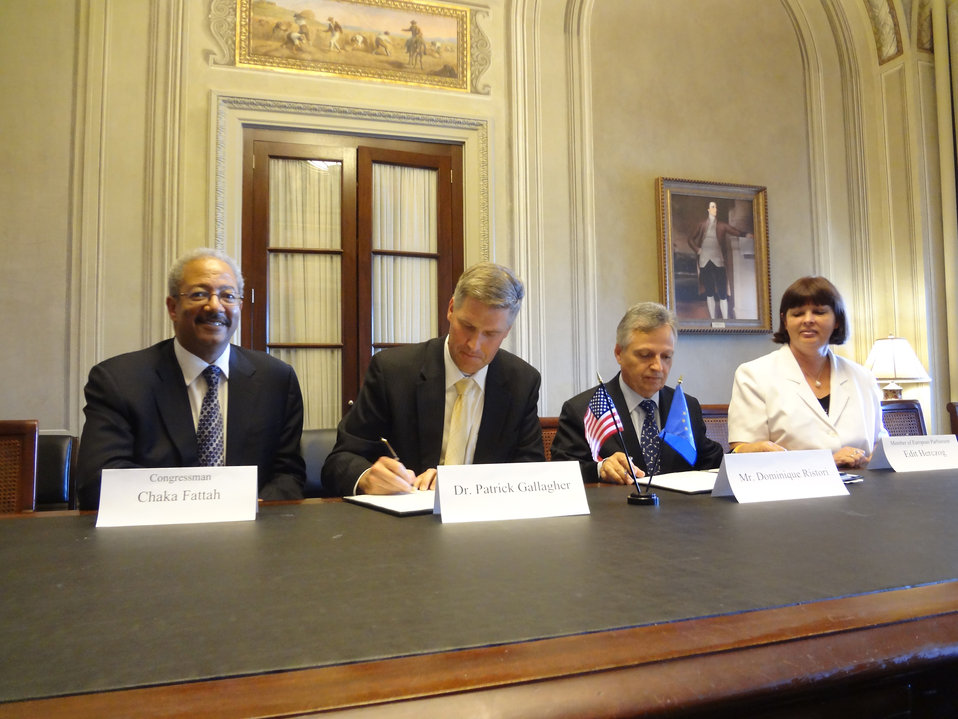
E.U. and U.S. to Extend Scientific Cooperation on Measurements and Standards

Congressman Chaka Fattah (D-PA), Under Secretary of Commerce for Standards and Technology and NIST Director Patrick Gallagher, Joint Research Centre (JRC) Director General Dominique Ristori and European Parliament Member Edit Herzog at a signing ceremony July 17, 2013. NIST and the JRC agreed to expand their current scientific cooperation to include new areas of research.